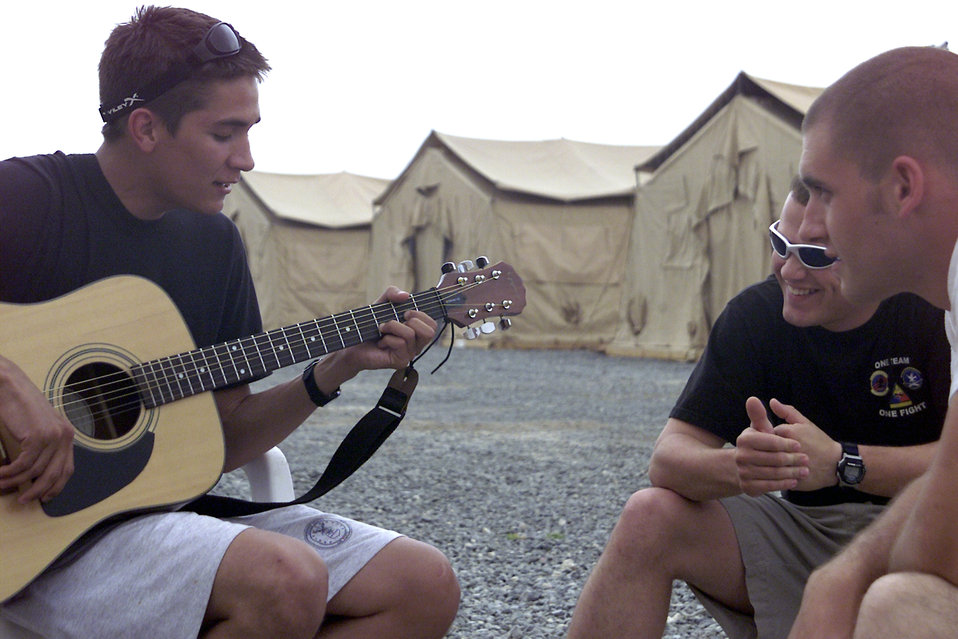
A little bit of rock 'n' roll

SOUTHWEST ASIA -- (From left to right) Airman 1st Class Jonathon Moreira, Staff Sgt. Jamie Gorm and Airman Travis Weaver take time out for a jam session. The Airmen are assigned to the 886th Security Forces Squadron at a forward-deployed location. They are deployed from Lackland Air Force Base, Texas.